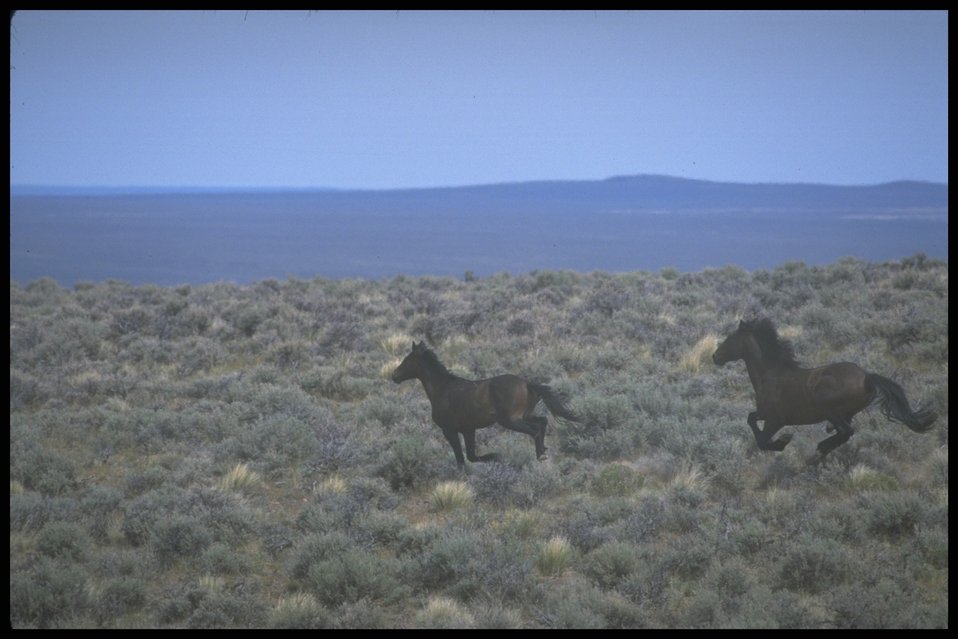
Wild Horses, Lakeview District.